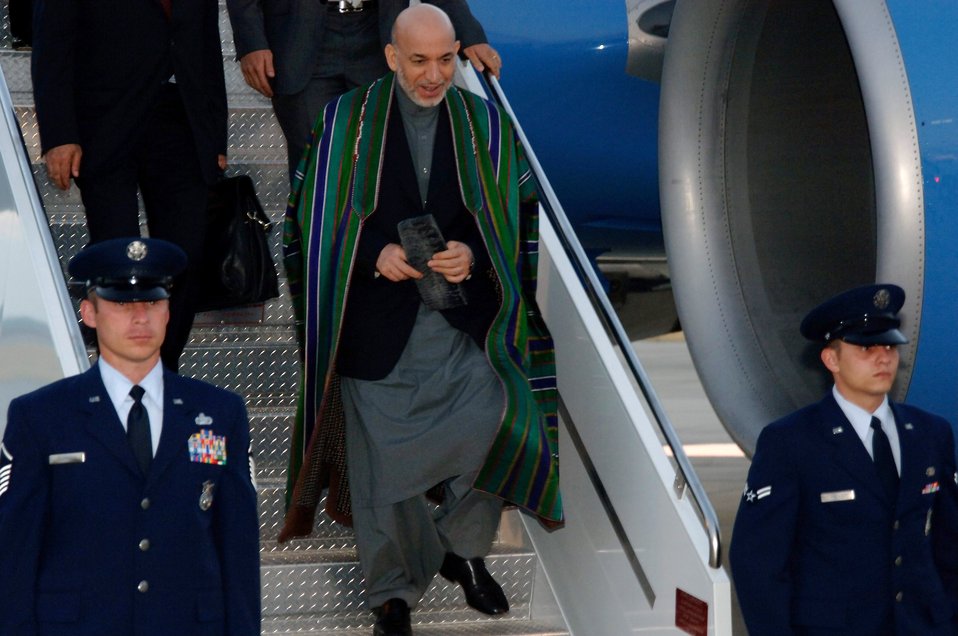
President hosts Pakistani, Afghan presidents

Afghanistan's President Hamid Karzai exits an aircraft on the flightline at MacDill Air Force Base, Fla., Sept. 26. President Karzai visited with the commander of United States Central Command during his visit to the United States this week.